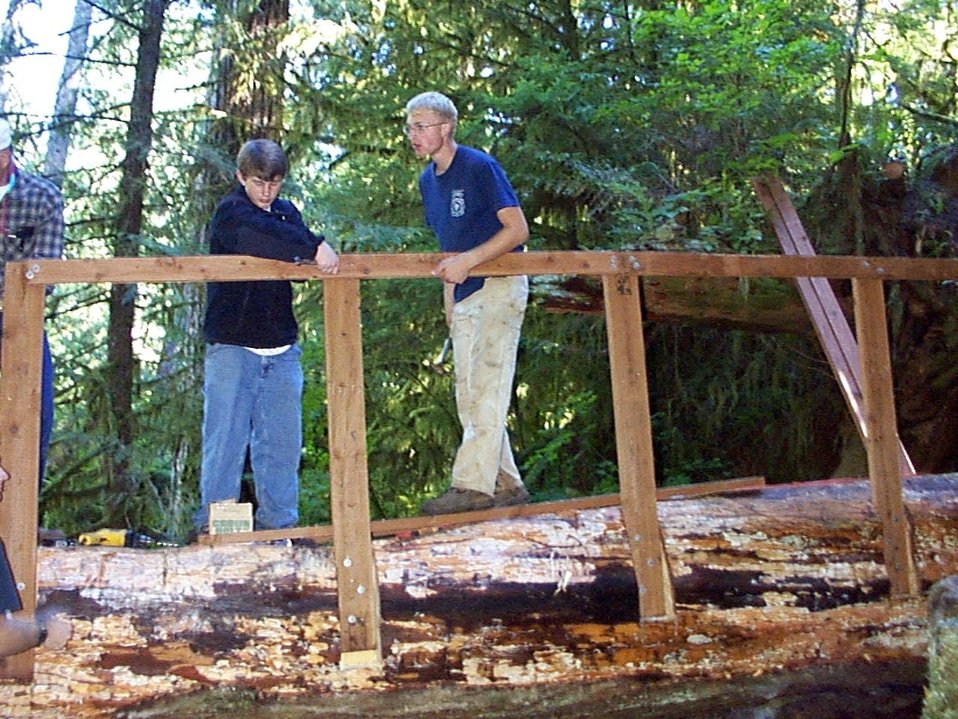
Boy Scouts install hand rail on the foot bridge at McGowen Creek.